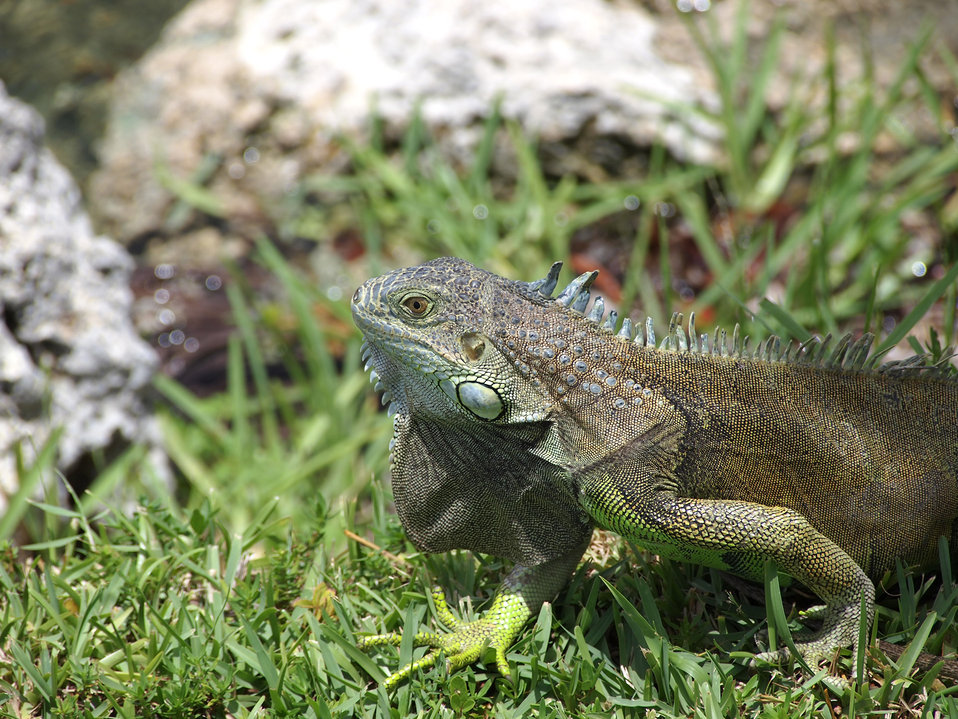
Iguana by lake

Iguana heading for sum sun on the rocks.